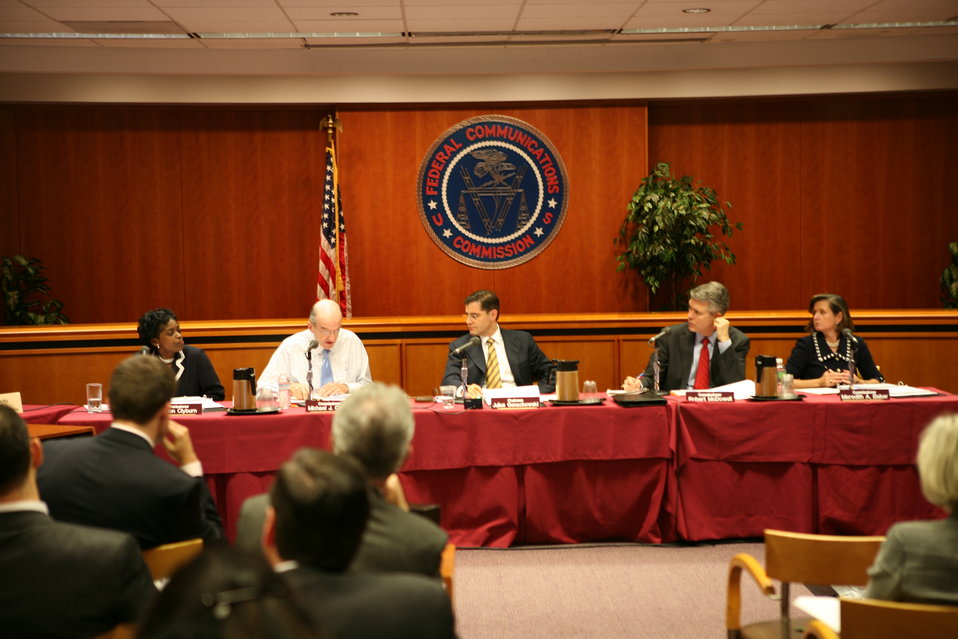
Midterm Review7

Broadband Midterm Review, 9-29-09